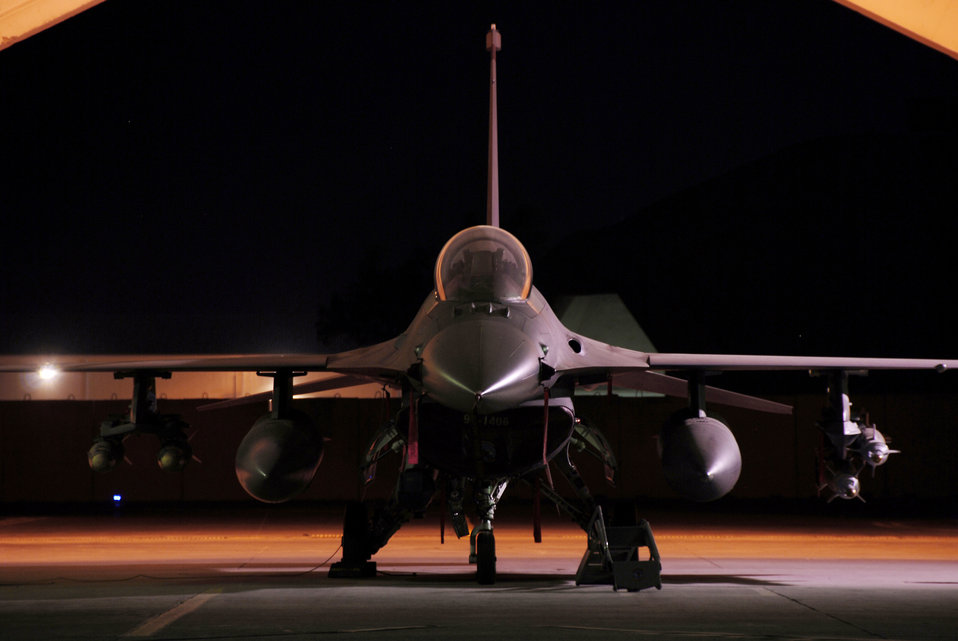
Aug. 20 airpower summary: F-16s cover coalition convoys

An F-16CJ Fighting Falcon is housed under a hardened aircraft shelter in Iraq. The F-16 is highly maneuverable and has proven itself in air-to-air combat and air-to-surface attack.